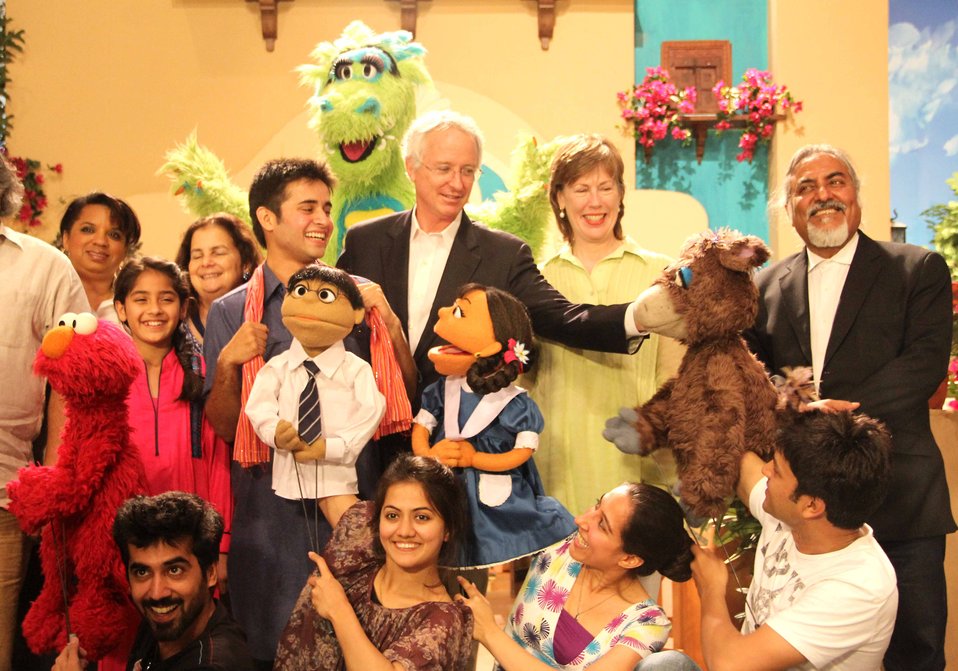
U.S. Ambassador’s Visit to Sim Sim Hamara Highlights U.S. Commitment to Improved Children’s Education in Pakistan at Lahore on 28 April, 2012

Mr. Cameron Munter and his wife Dr. Marliyn Wyatt group photo with the artist of the sim sim hamara